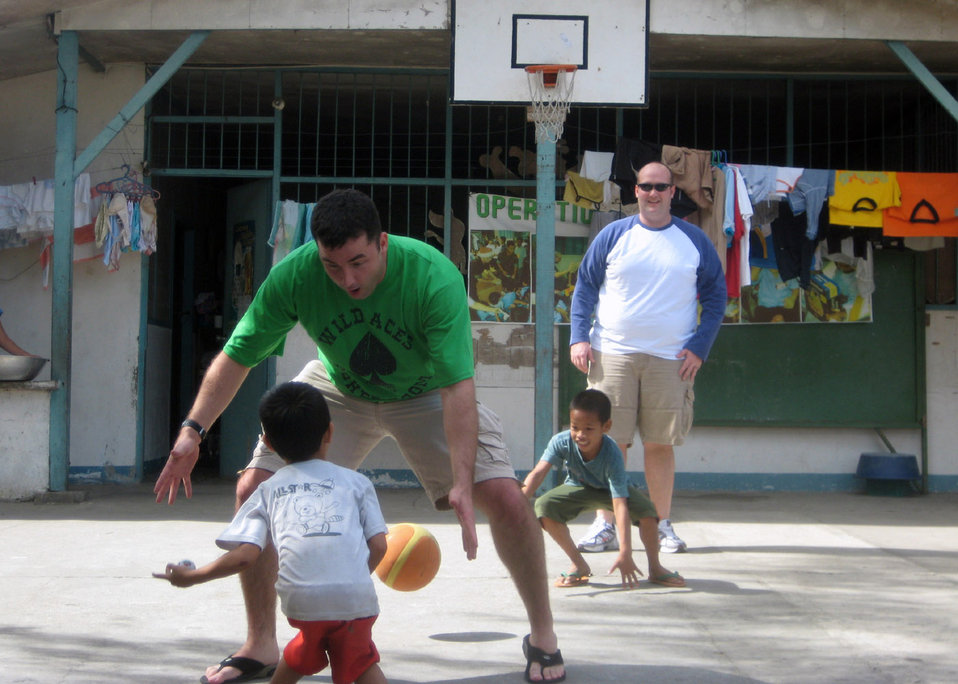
Kadena Airmen visit orphanage in Philippines

Capt. Zak Blom and Capt. Matt Halladay play basketball with children Jan. 19 at the Duyan ni Maria orphanage in Angeles City, Pampanga in the Philippines. Members of the 17th Special Operations Squadron, 353rd Operations Support Squadron and 25th Intelligence Squadron Det. 3 stopped by the orphanage and single mothers home with boxes of clothing, shoes, toys, books and school supplies. Captain Blom is a 17th SOS pilot, and Captain Halladay is a 17th SOS navigator.